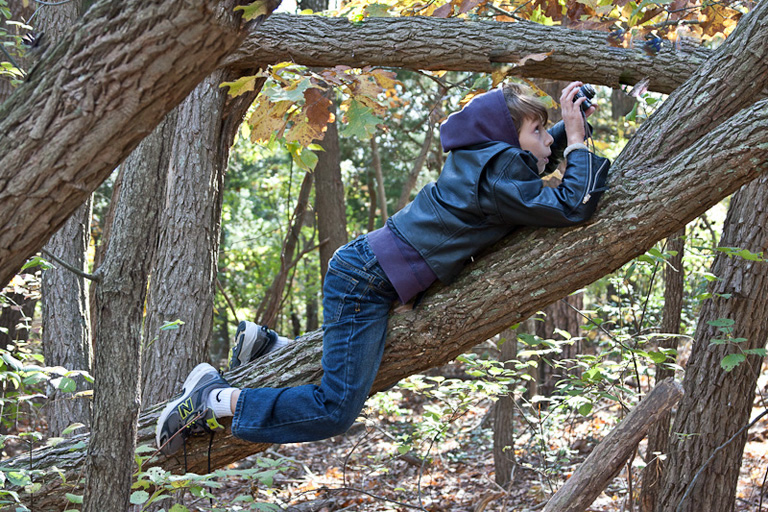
Photo of the Week - Connecting Children with Nature

Photo of the Week - 2/20/12

Boy scout photographing nature at the Edwin B. Forsythe National Wildlife Refuge.